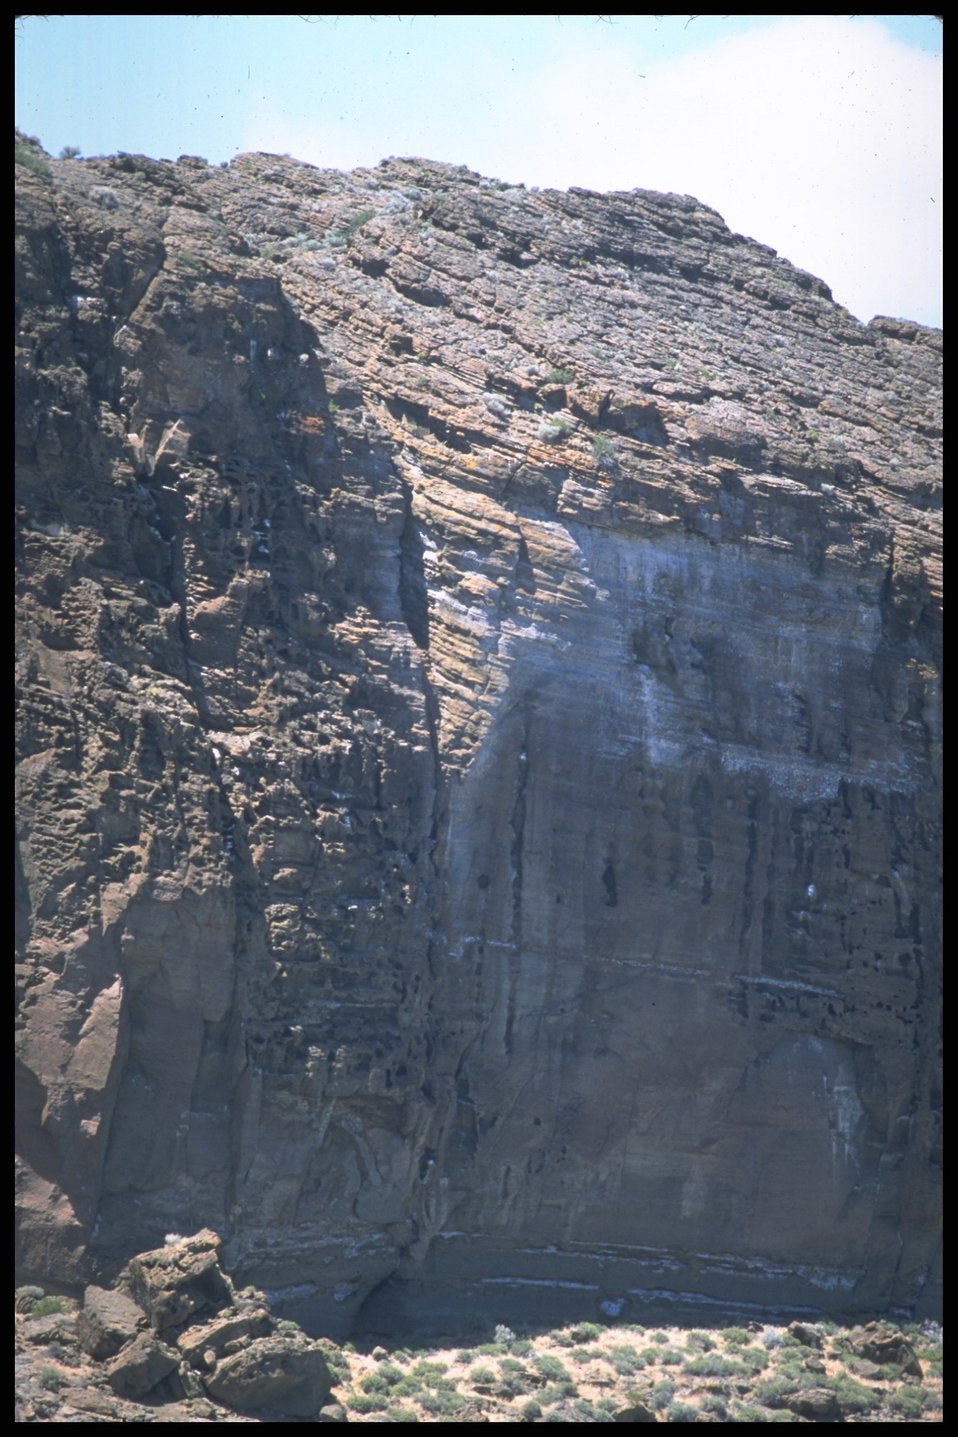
Scenic view, Ft. Rock, Lakeview District.